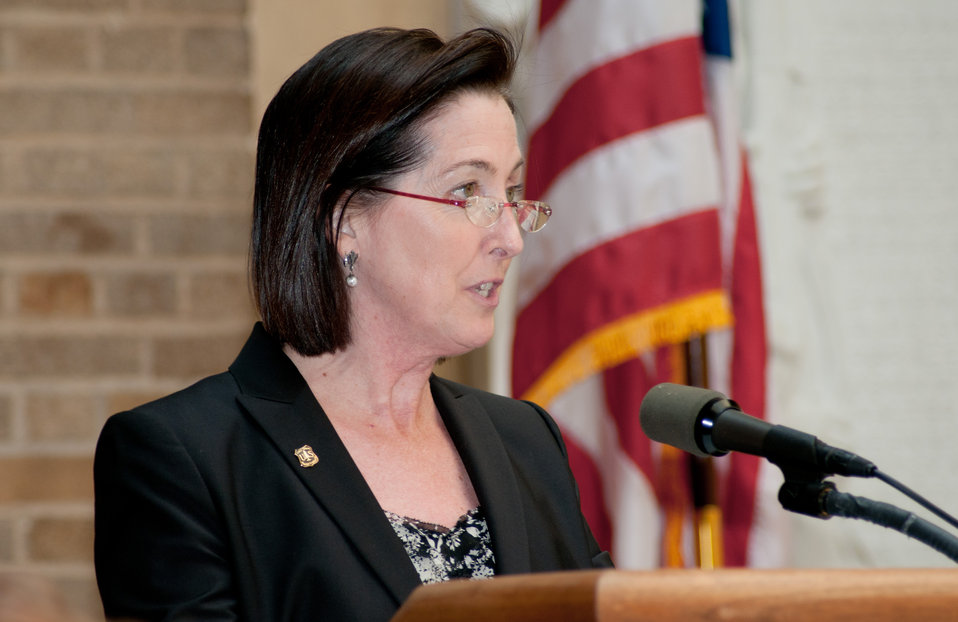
Forest Service Associate Chief Mary Wagner welcomed guests to the International Year of Forests (IYOF) celebration on Friday, June 3, 2011 on the Patio of the Whitten Building, Washington, DC.